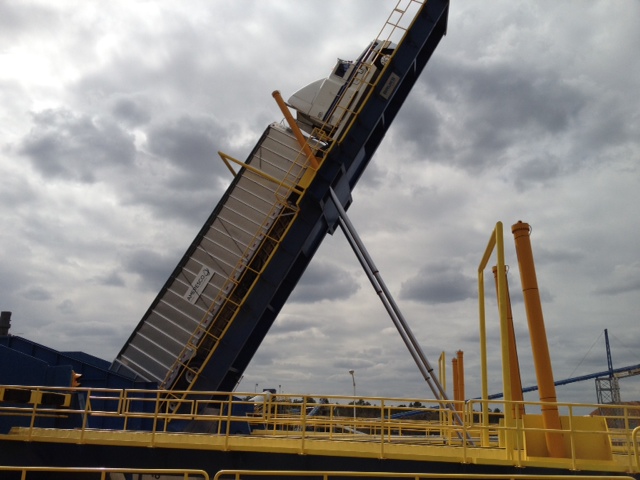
A truck delivering clean biomass

The primary fuel source for the high-tech renewable energy facility consists of local forest residue and wood chips, and bio-derived fuels .